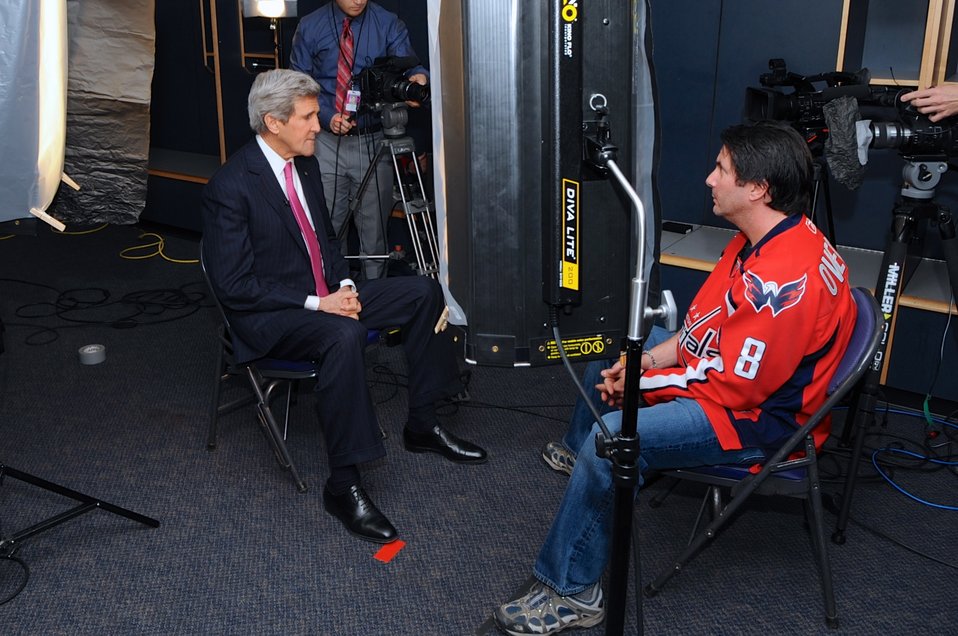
Secretary Kerry is Interviewed by DC 101 Segal Before Capitals Game

U.S. Secretary of State John Kerry is interviewed by DC 101 host Elliot Segal before dropping the puck and sending off Olympic hockey players as the Caps played the Winnipeg Jets at the Verizon Center in Washington, D.C., on February 6, 2014.